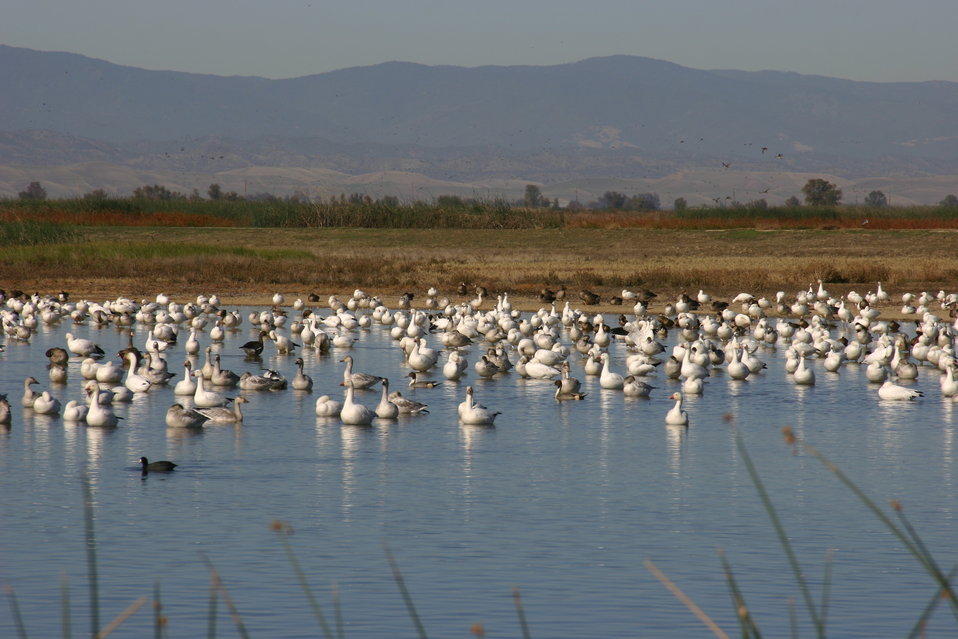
Snow geese at Sacramento National Wildlife Refuge, October 2009.